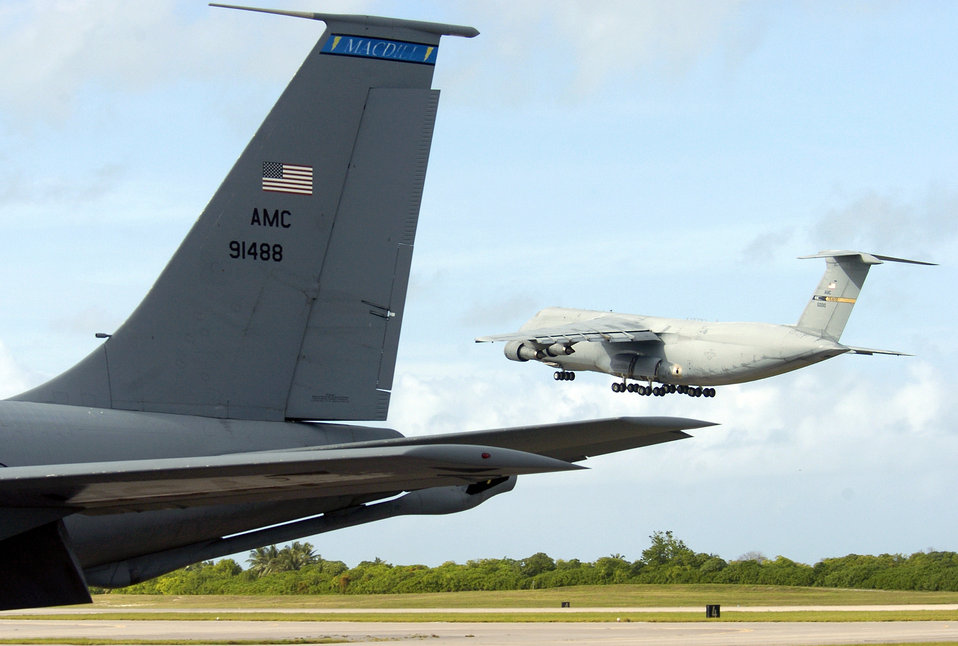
Global mobility aircraft saving lives in Iraq

A C-5 Galaxy takes off from a forward operating location in July. Gen. Duncan J. McNabb, Air Mobility Command commander, spoke at the Air Force Association's 2006 Air and Space Conference and Technology Exposition in Washington, D.C., Sept. 26. He said AMC has started using C-5 and C-17 Globemaster III aircraft to move heavy equipment formerly moved on the ground.